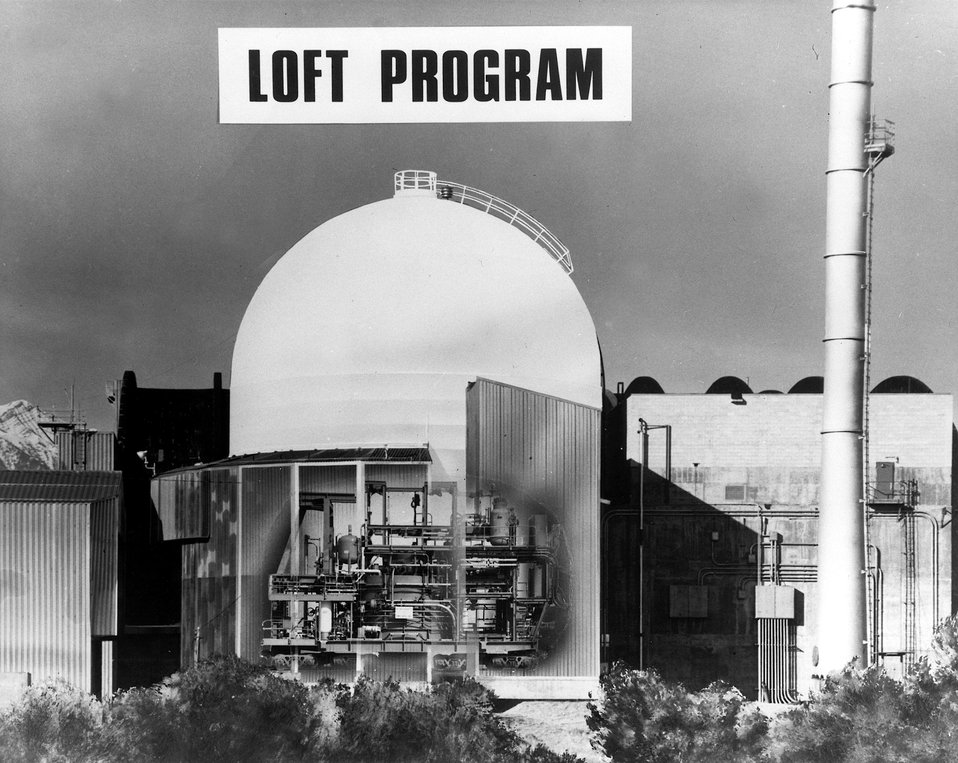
A view of the Loss of Fluid Test Facility at the Energy Research and Development Administration's Idaho National Engineering Laboratory. Circa 1975.